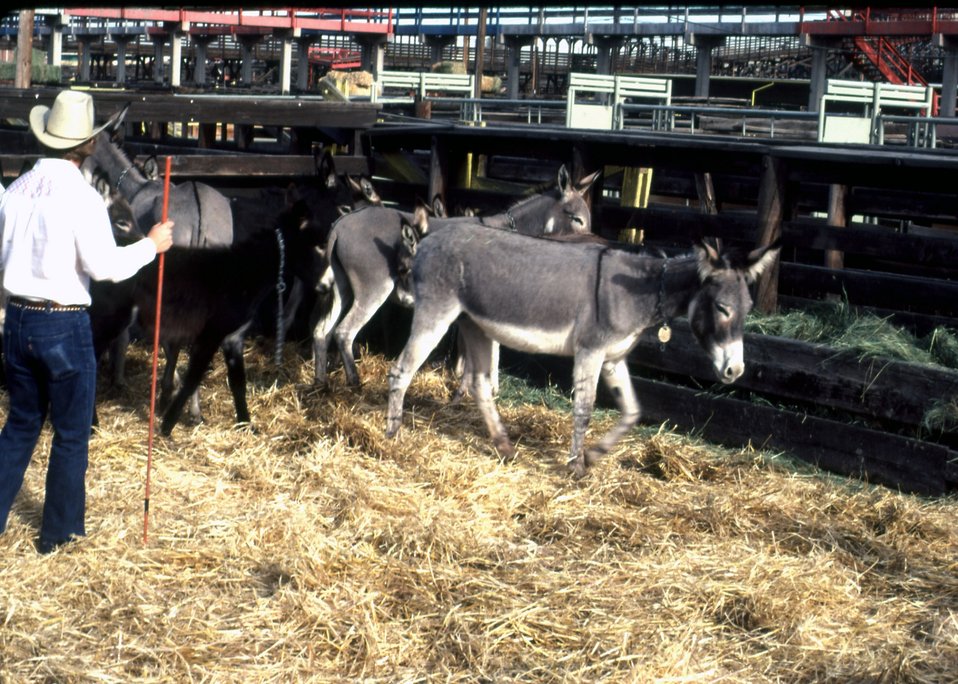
Man with Burrows in Pin